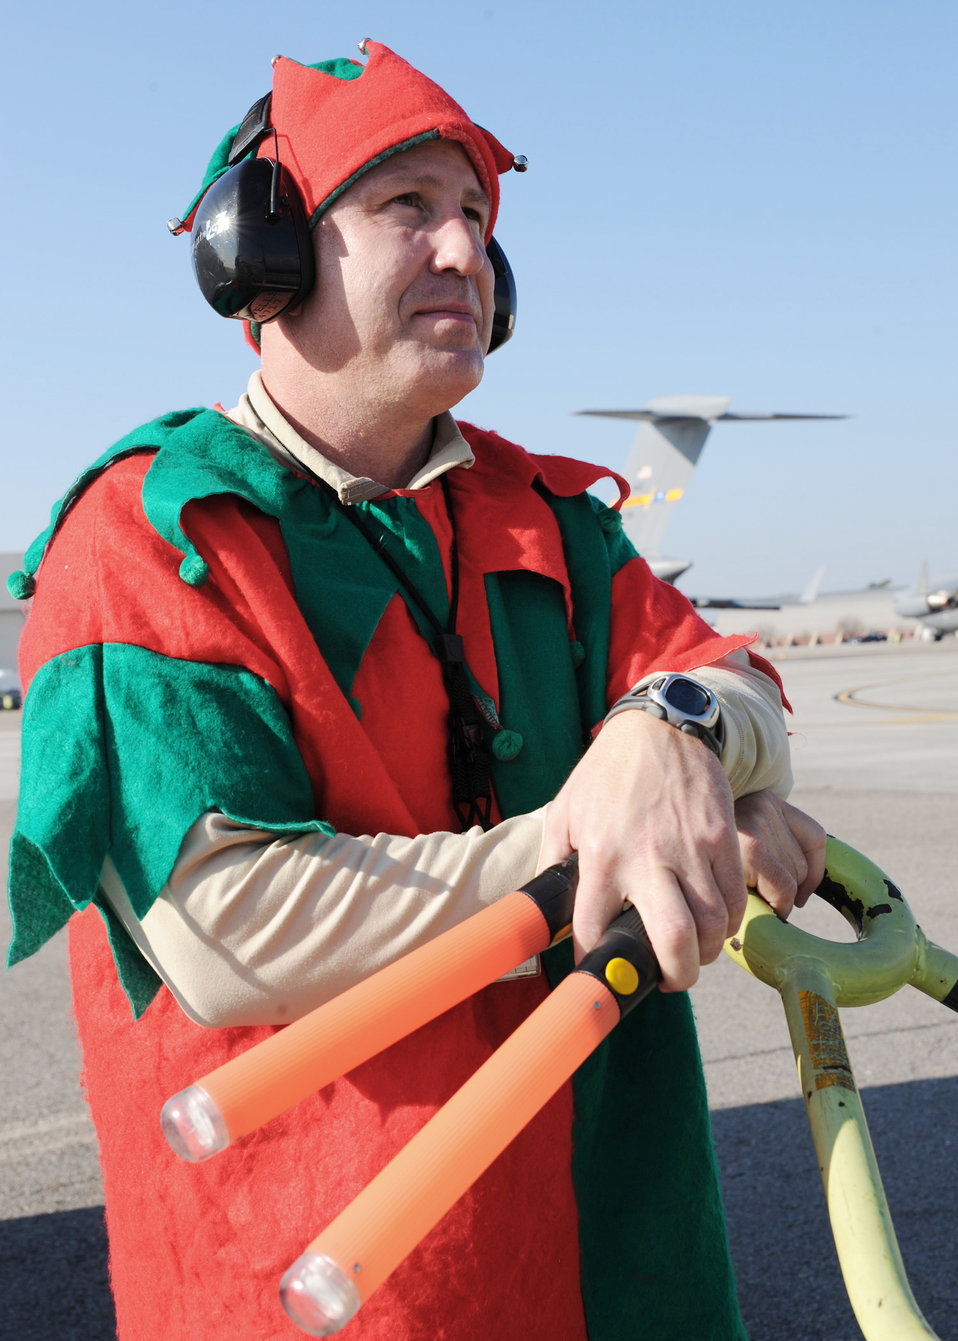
Santa Claus, friends welcome C-17

Elf Chief Master Sgt. Derrell Wells helps Santa with marshalling a C-17 Globemaster III on the flightline at Charleston Air Force Base, S.C., Dec. 22, 2009. The 437th Aircraft Maintenance Squadron held a fundraiser which allowed individuals to vote on who they wanted to dress up as Santa Claus, an elf and a reindeer while marshalling in a C-17. Chief Wells is the 437 AMXS superintendent.